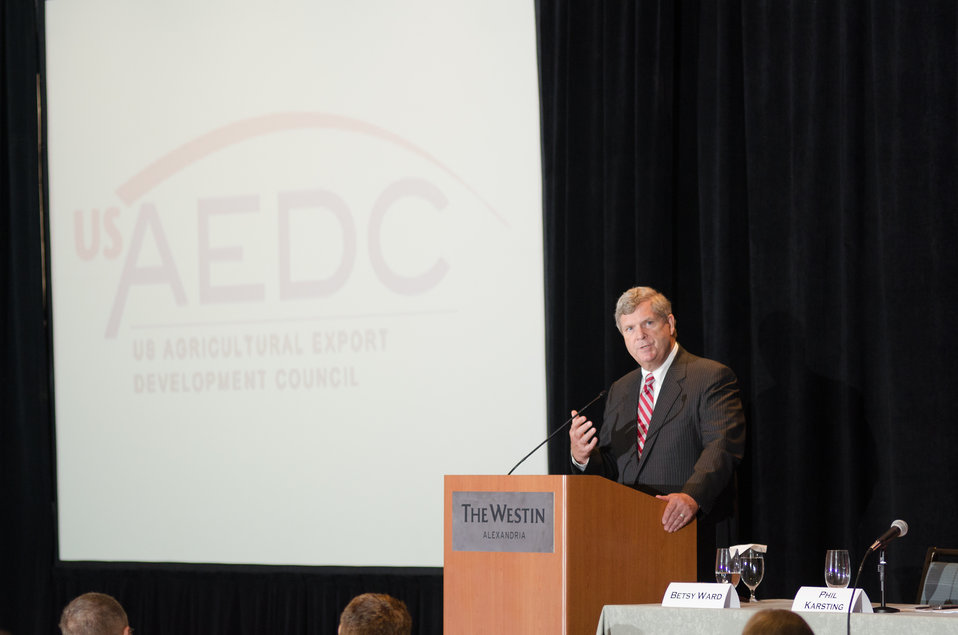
Agriculture Secretary Tom Vilsack presents keynote remarks at the U.S. Agricultural Export Development Council (USAEDC) Attaché Seminar, at the Westin Alexandria, in Alexandria, VA, on Wednesday, July 10, 2013. USAEDC is a non-profit private sector trade association that provides an exchange and coordination of information to promote the export of the products of U.S. agriculture. Their membership includes U.S. commodity trade associations, farmer cooperatives and state regional trade groups from around the country. In the interest of U.S. agricultural growers and producers their export promotion efforts, work in conjunction with the U.S. Department of Agriculture Foreign Agricultural Service.